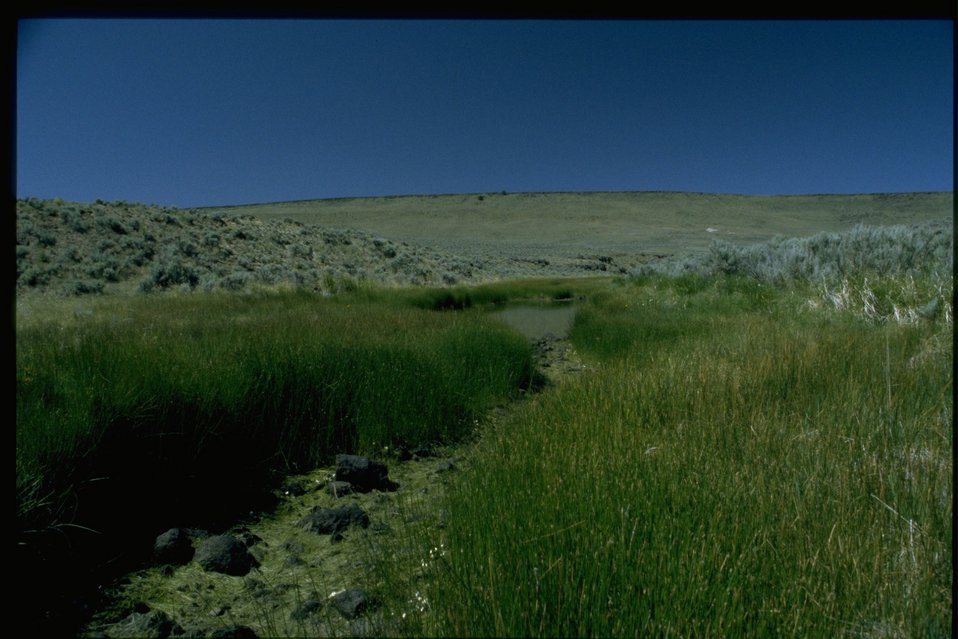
Guano Creek and wildflower habitat.